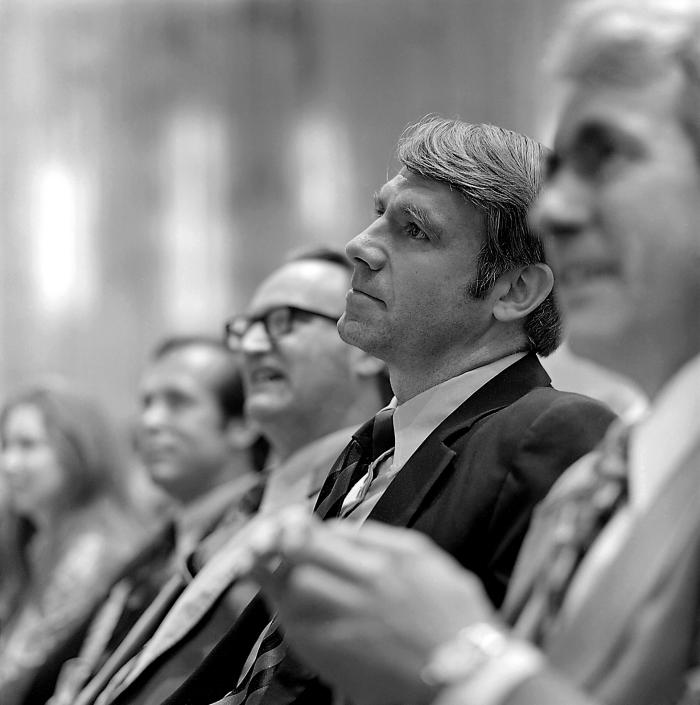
This April 5, 1977 photograph depicts former CDC Director William H. Foege, M.D., M.P.H., while he was seated at a ceremony in which he was named Director-Designate of the Centers for Disease Control by DHEW Secretary Joseph A. Califano.